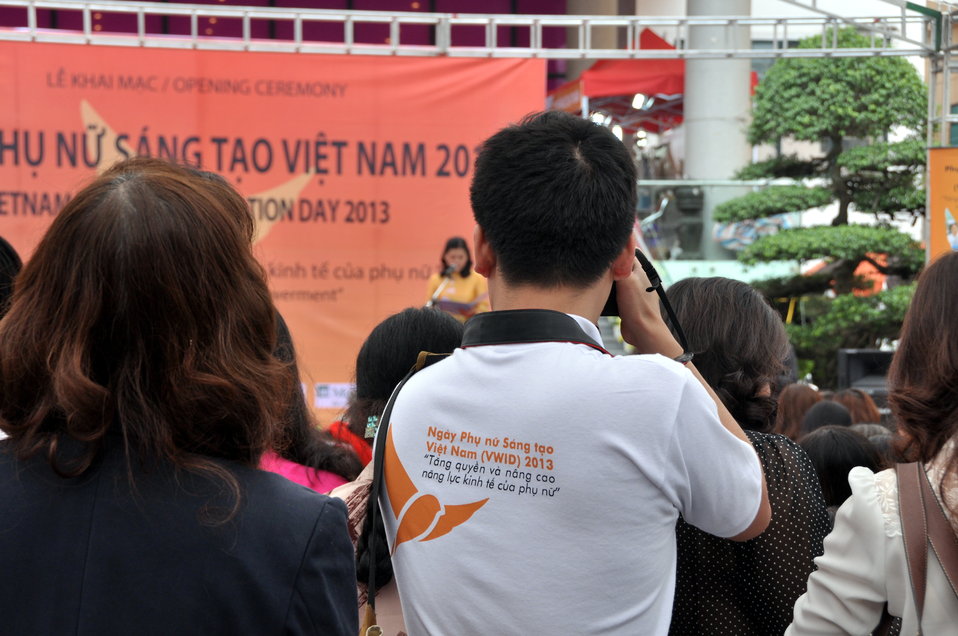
Vietnam Women Innovation Day 2013

Hanoi, October 1, 2013.